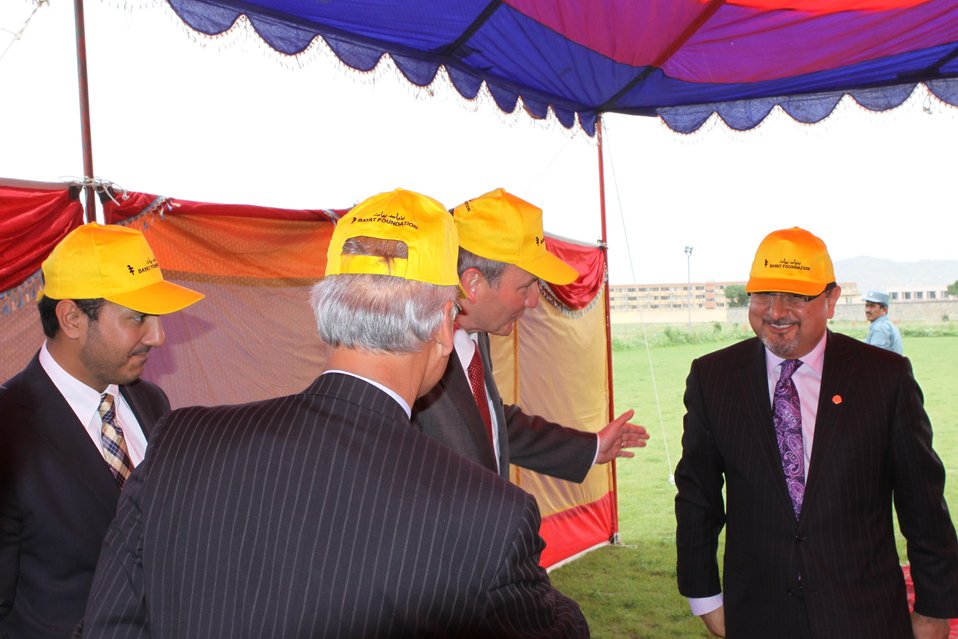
100526 AUAF Graduation 378